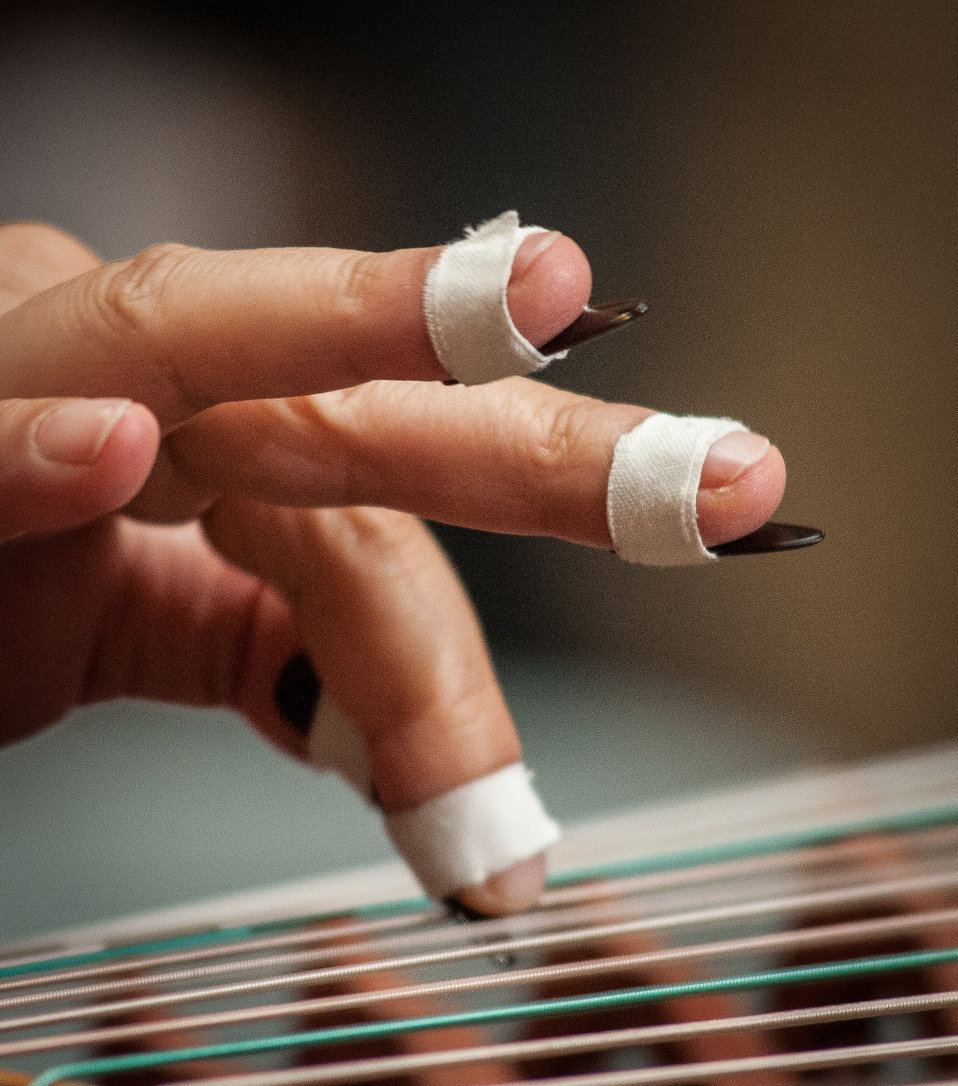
Washington Chinese Traditional Orchestra’s Huilan Chen gives a solo performance of “Gao Shan Liu shui” and “Yi zu Wu qu” on the Guzheng, an ancient type of musical instrument, during the U.S. Department of Agriculture (USDA) Asian Pacific American Heritage Month Observance, at the USDA headquarters, Whitten Building patio, in Washington, D.C., on Thursday, May 23, 2013. This year’s theme is “Building leadership; Embracing the Cultural Values and Inclusions.”